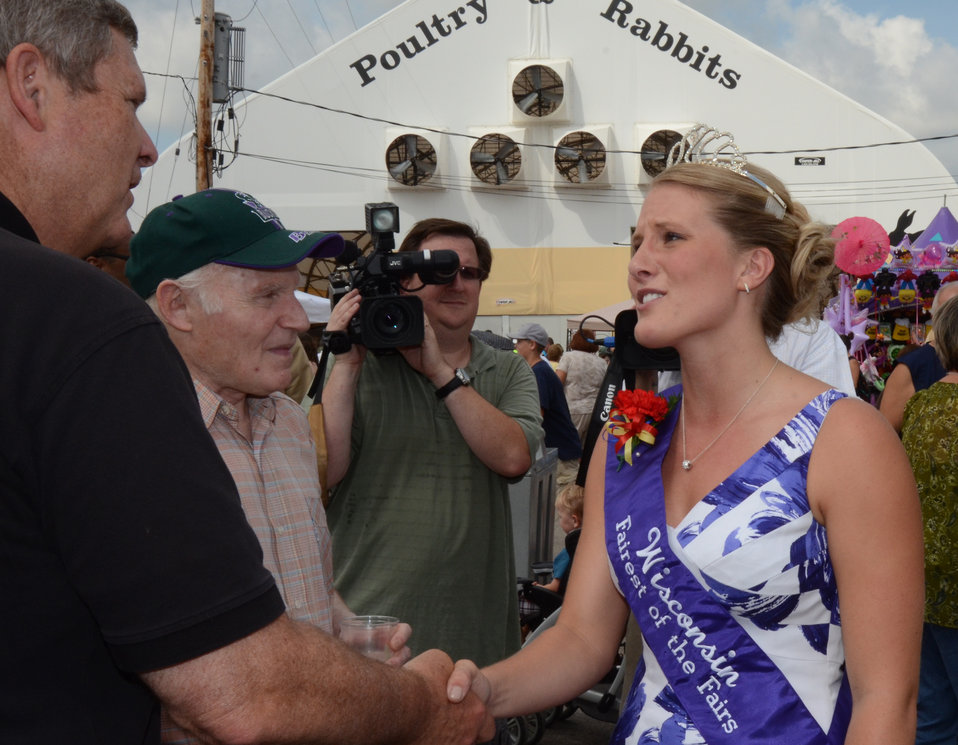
Wisconsin Fairest of the Fair Erica Spiegelberg meets Agriculture Secretary Tom Vilsack (left) and Wisconsin Senator Herb Kohl at the Wisconsin State Fair in West Allis, WI, on Thursday, August 4, 2011, USDA Photo by Lance Cheung.